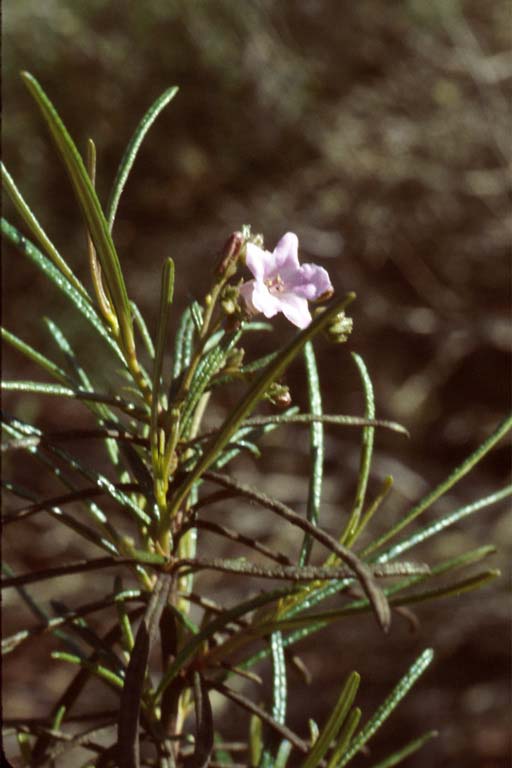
Indian Knob mountainbalm (Eriodictyon altissimum) is a rapid-growing, short-lived evergreen shrub that occurs in western San Luis Obispo County, California.